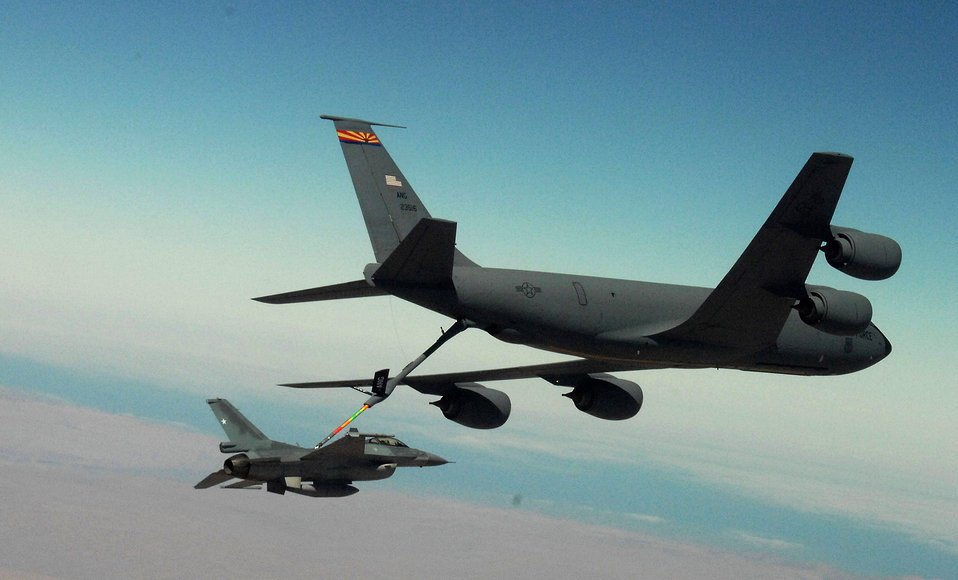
Feb. 8 airpower summary: KC-135s refuel coalition aircraft

Aerial refuelers, like this KC-135 Stratotanker refueling an F-16 Fighting Falcon, keep coalition aircraft in the fight to support operations Iraqi Freedom and Enduring Freedom. Air Force tanker crews flew 50 sorties and offloaded approximately 3.3 million pounds of fuel to 305 receiving aircraft.